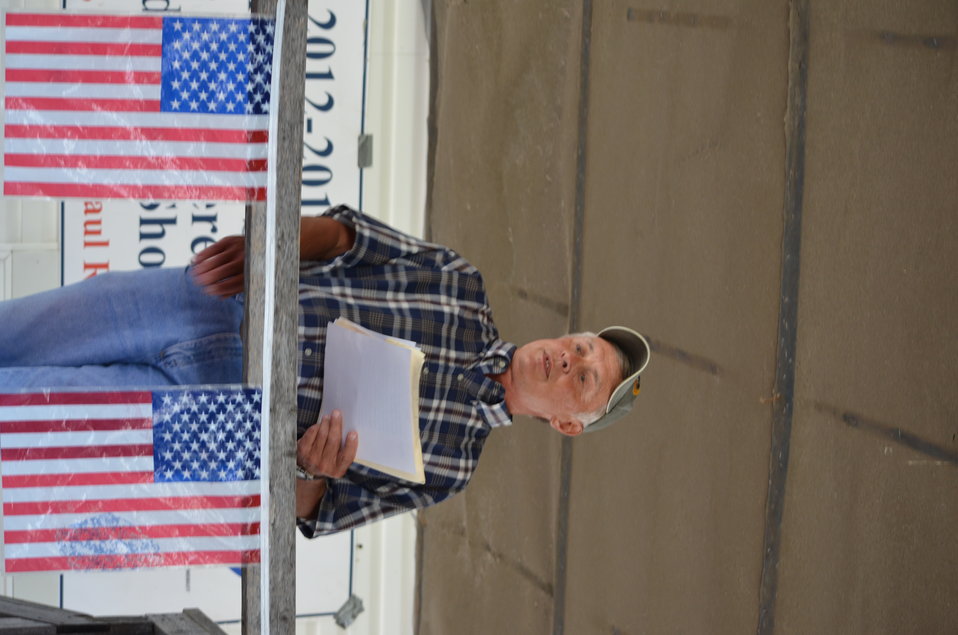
Emcee Billy Hildebrand.